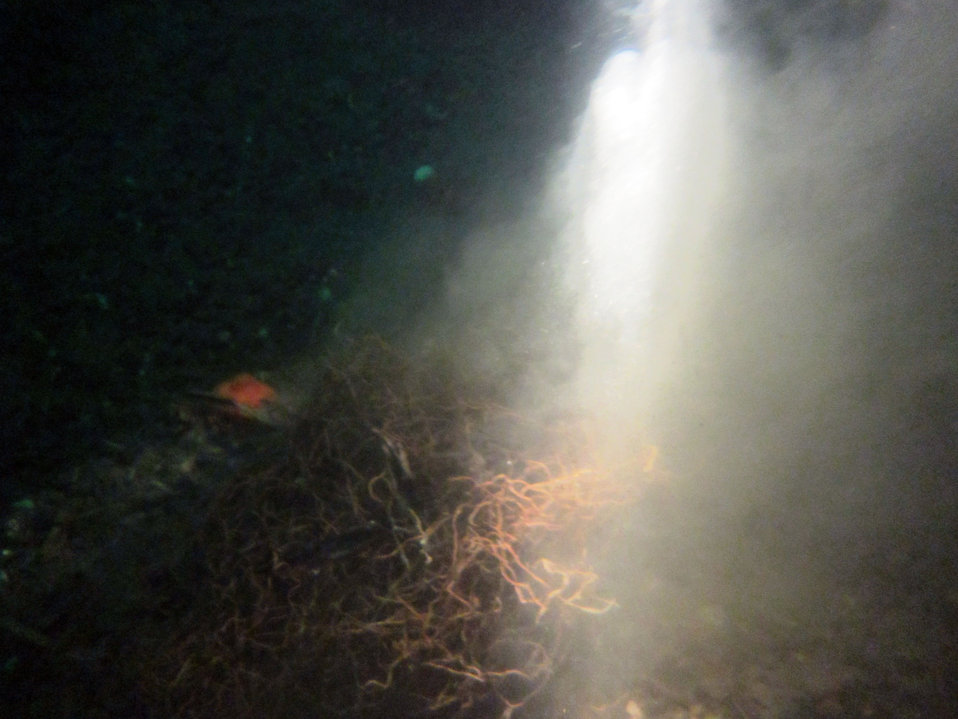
February 6, 2013 A murky scene of abandoned fishing nets, Puget Sound

EPA has been assisting the Northwest Straights and Natural Resource Consultants (NRC) in mapping derelict net locations in Puget Sound since 2010. Several weeks of dive operations have been devoted to this project from 2010 and 2013. By assisting NRC on the survey effort, EPA enables them to focus more of their efforts on gear removal.

Nets are not the only problem, but they are the highest priority. Nets kill more marine life and birds and degrade the underwater habitat more than other debris such as crab pots.

As of December 31, 2012, the Northwest Straits Initiative removed 4,358 derelict fishing nets and 2,889 crab pots from Puget Sound. This incredible effort has restored 616 acres of critical marine habitat.

Over 291,015 animals, representing more than 270 species, were found entangled in this gear. Species found included porpoise, sea lions, scoters, grebes, cormorants, canary rockfish, Chinook salmon, and Dungeness crab.

In 2010, the Initiative completed an 18-month project with American Recovery and Reinvestment Funding granted by NOAA. Find out more about current efforts to handling abandoned and preventing this problem in the first place at: www.derelictgear.org/ and www.nwstraits.org/

Join the conversation on www.facebook.com/EPADivers